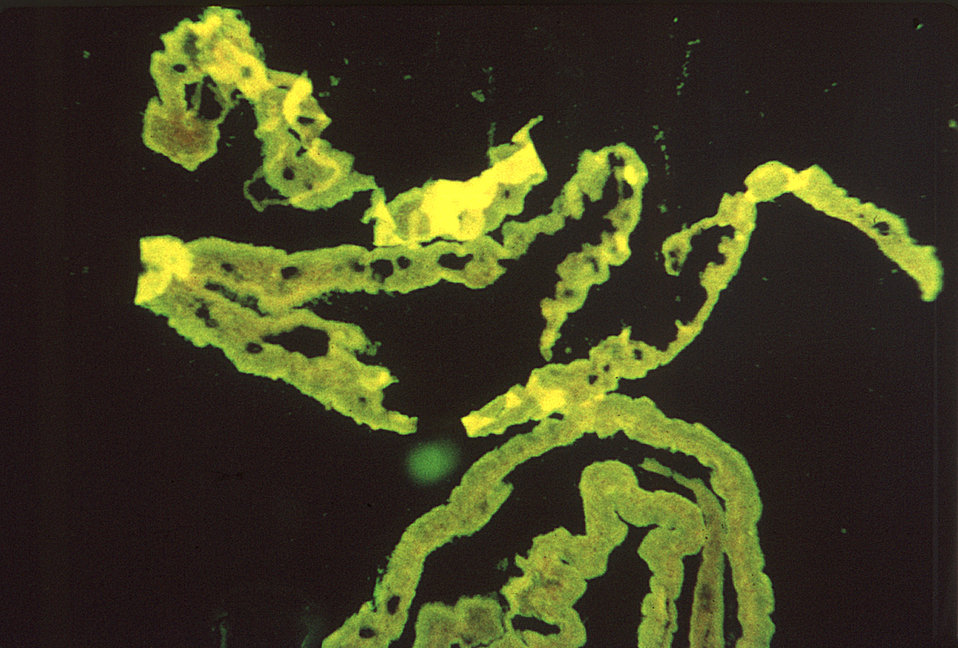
Under a low magnification of 78X, and stained using an indirect fluorescent antibody (IFA) test, this photomicrograph confirmed the presence of Schistosoma mansoni trematodes.Laboratory Diagnosis for Schistosomiasis: